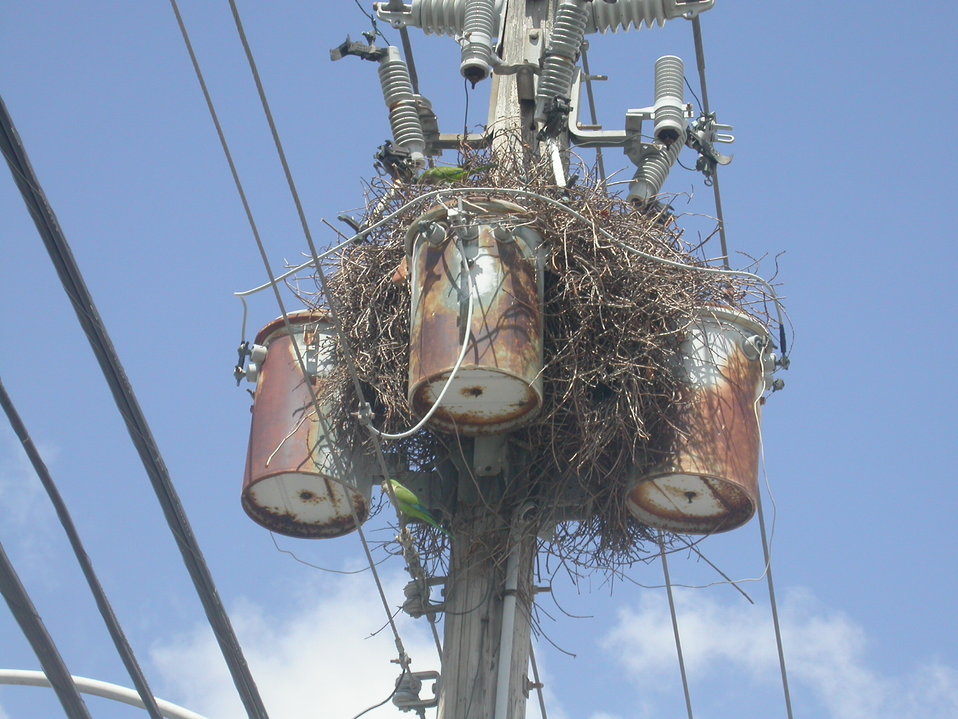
The invasive monk parakeets (or Quakers) damage utility structures with their large stick nests. The nests pose a fire and safety hazard to utility structures and workers.